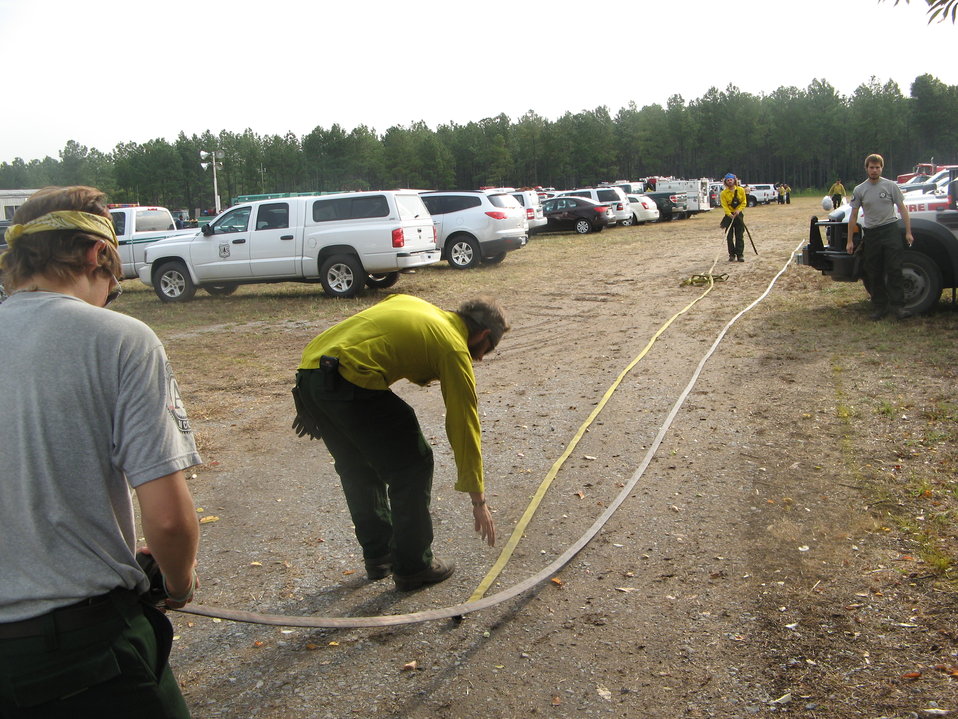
Hose roll AmeriCorps NCCC team

Suffolk, VA, August 2011: Members of the Phoenix 3 AmeriCorps National Civilian Community Corps stretch a fire hose to roll it up in preparaton for fighting the Lateral West Fire on Great Dismal Swamp Naitonal Wildlife Refuge.